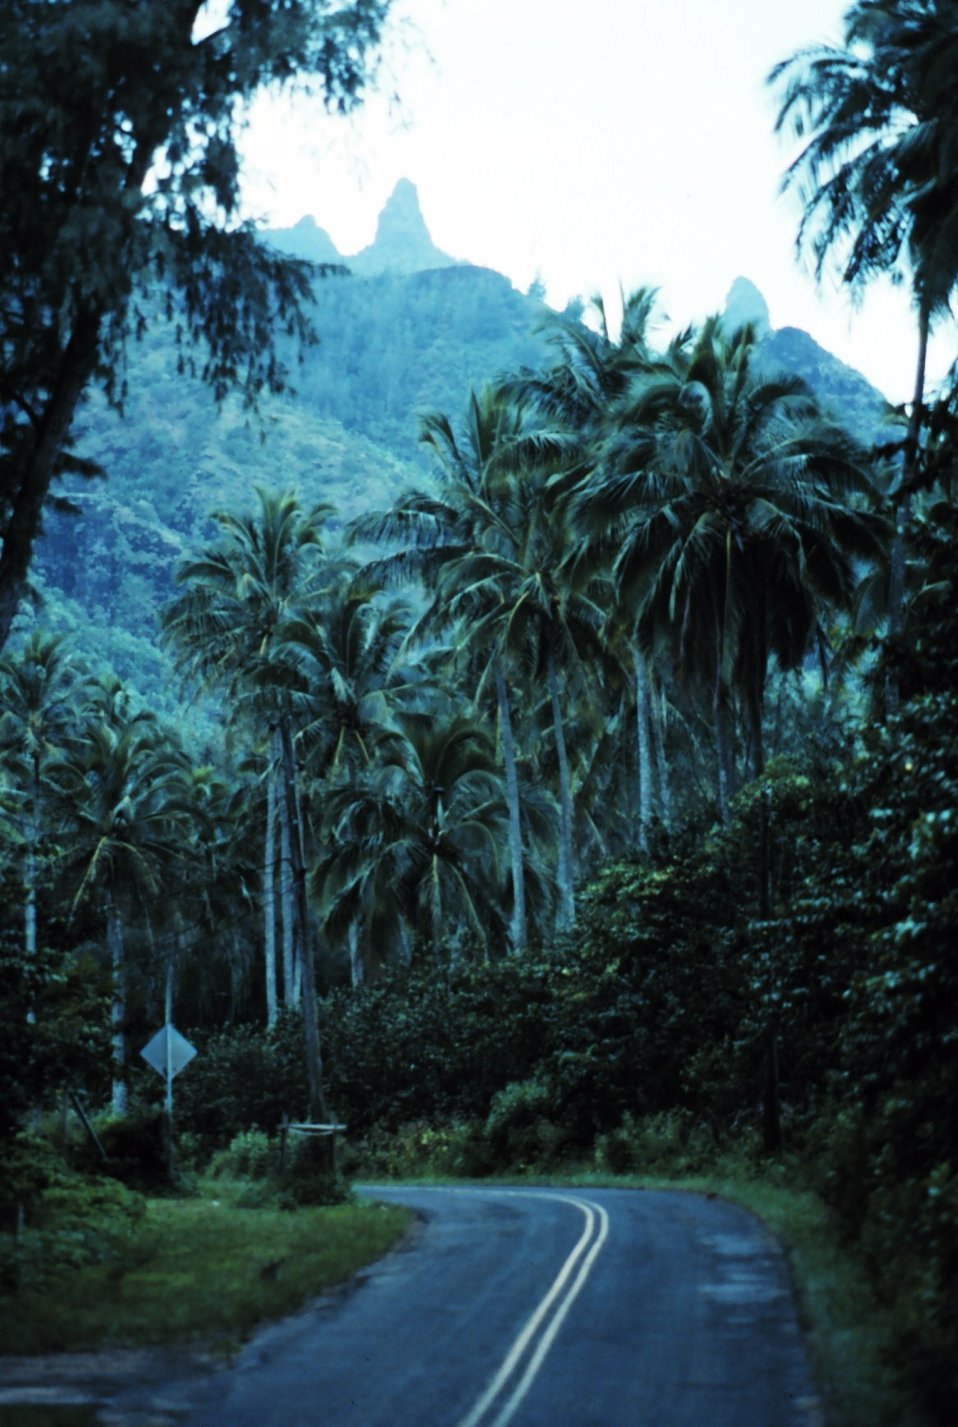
Kauai needle-like mountain peaks